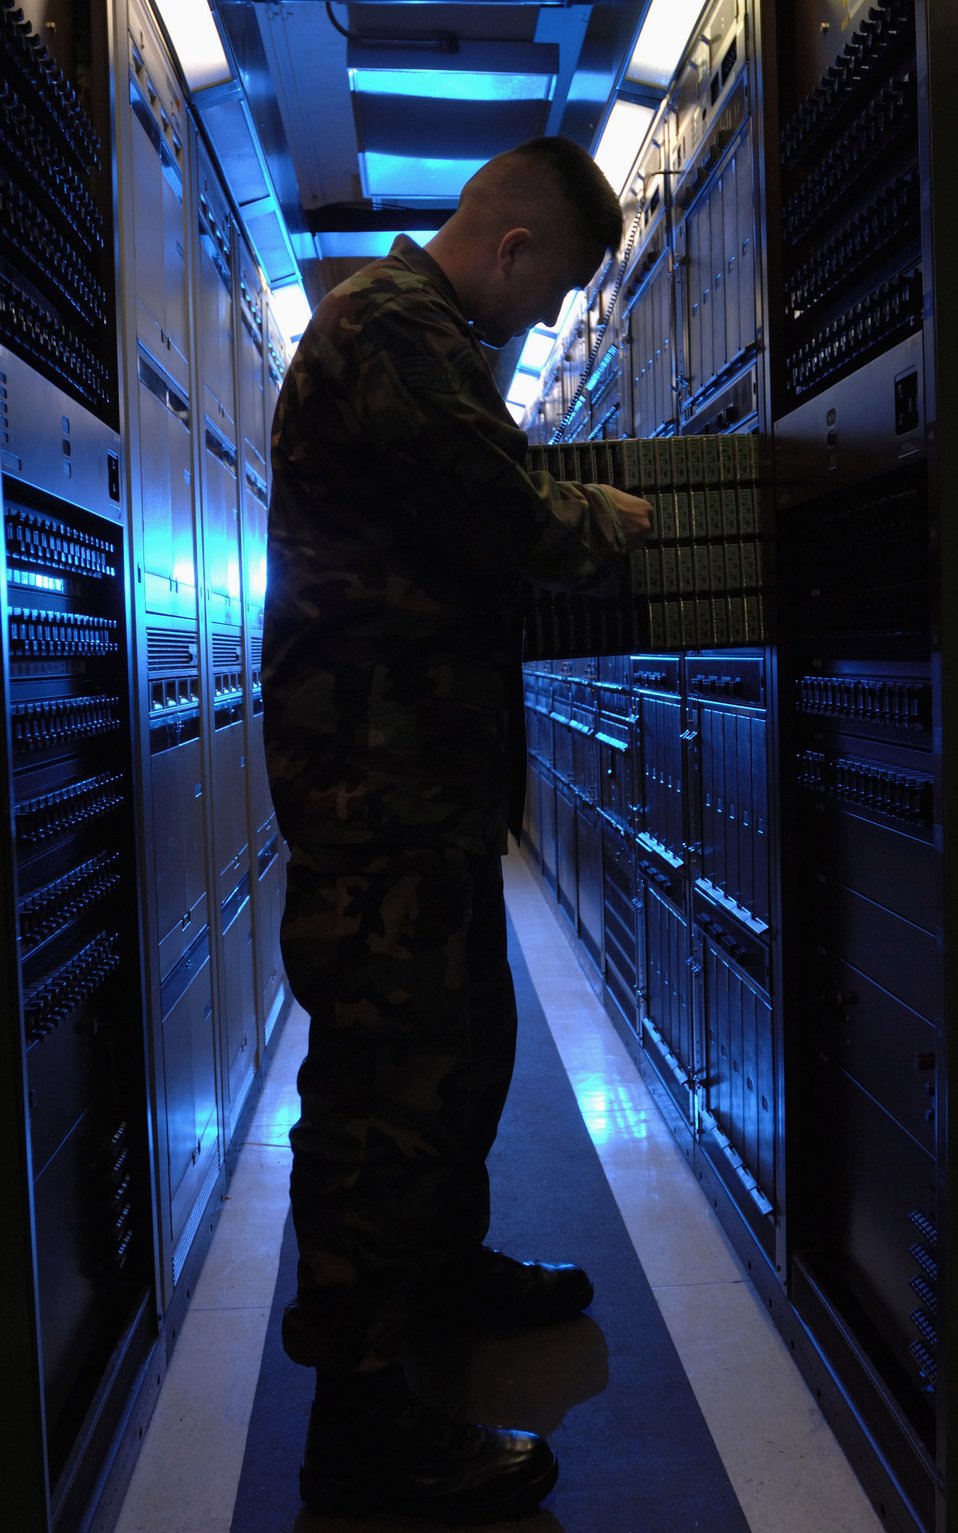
Testing the lines

Senior Airman Jason Wakefield checks telephone line cards during a routine inspection of the telephone network system Feb. 21 at Langley Air Force Base, Va. More than 18,000 telephone line cards support every telephone line connected to Langley AFB.